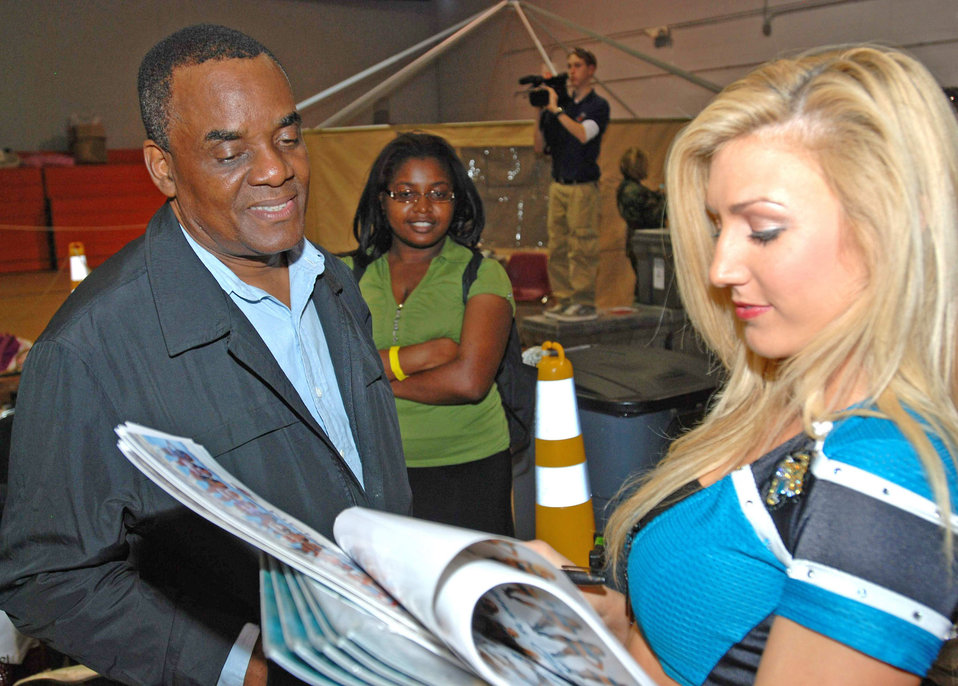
NFL Pro Bowl cheerleaders boost morale for Operation Unified Response workers

A Jacksonville Jaguars cheerleader signs an autograph for Cadet Pierre-Paul Jan. 27, 2010, at Homestead Air Reserve Base. Mr. Pierre-Paul is among 3,000 evacuees who've processed through Homestead ARB. National Football League cheerleaders and mascots selected to participate in the Pro Bowl visited the base to meet with relief workers and evacuees.